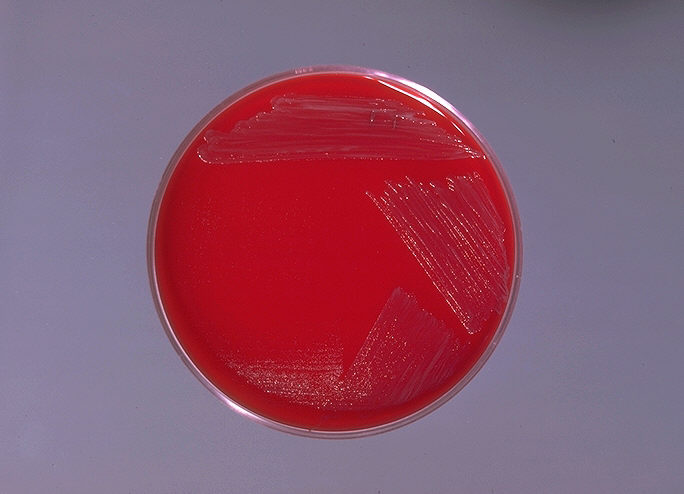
Blood agar plate culture of Corynebacterium aquaticum.